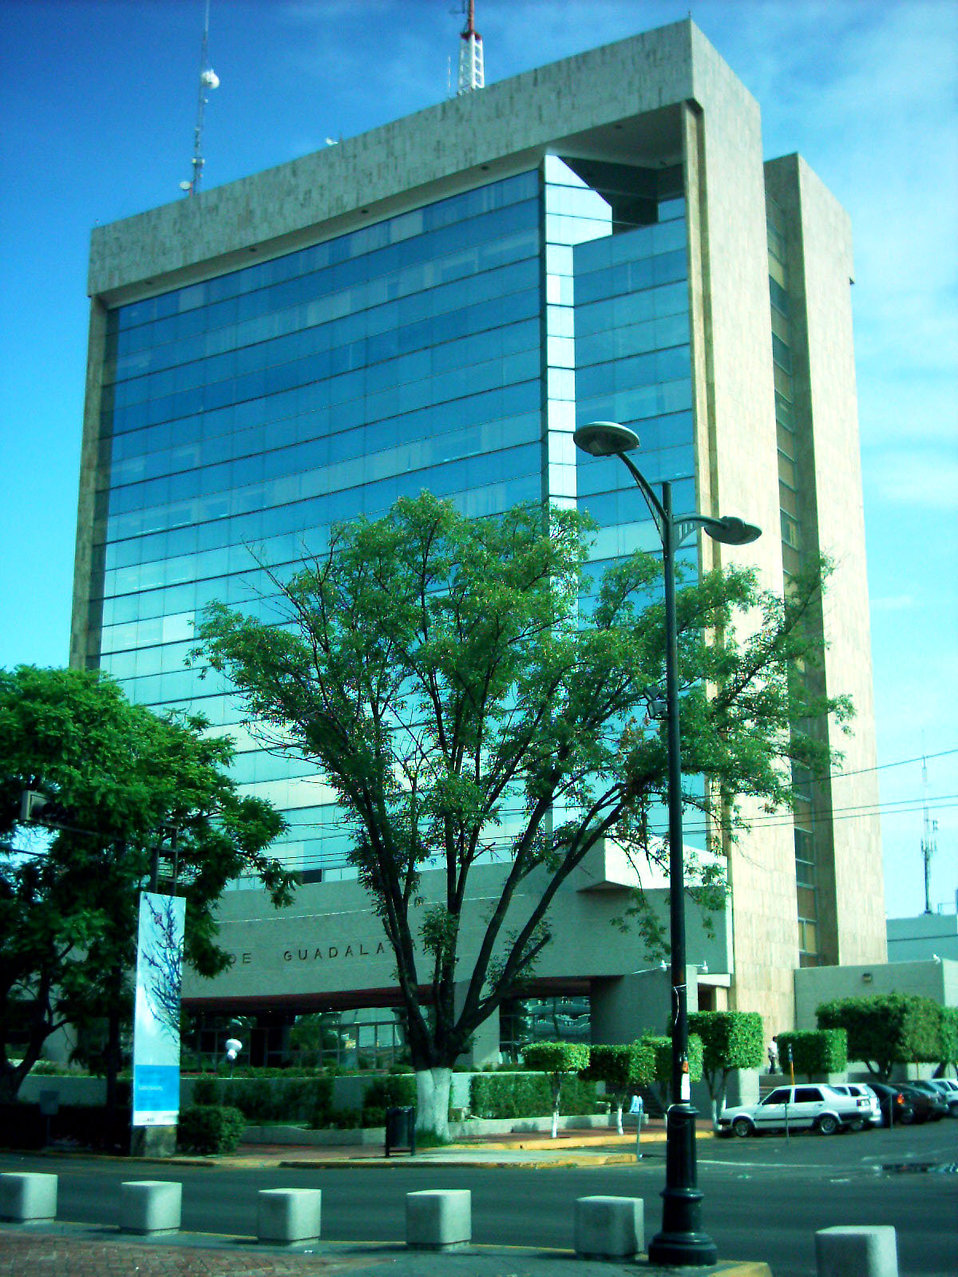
UdeG rectory building